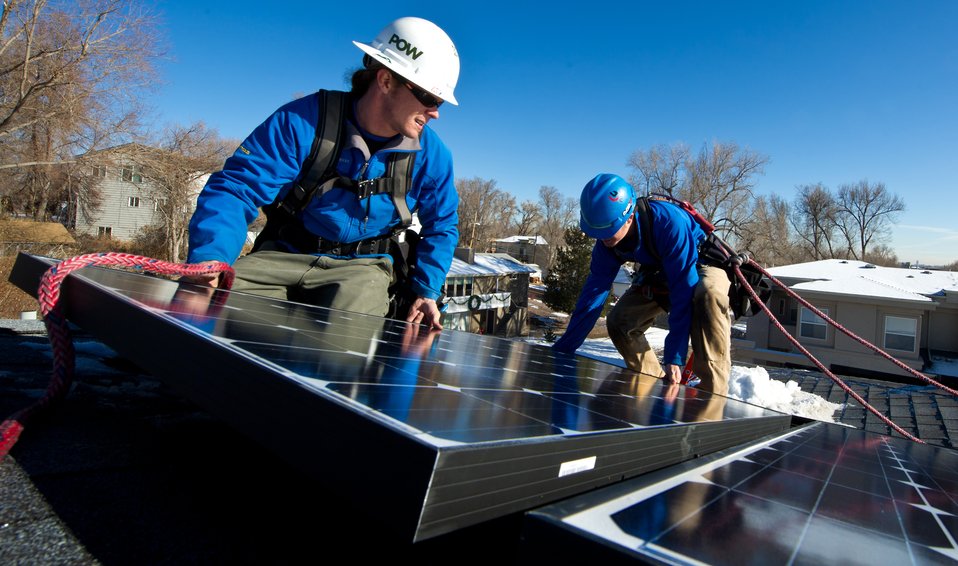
Lighthouse solar installs microcrystalline photovoltaic modules on top of a town house.